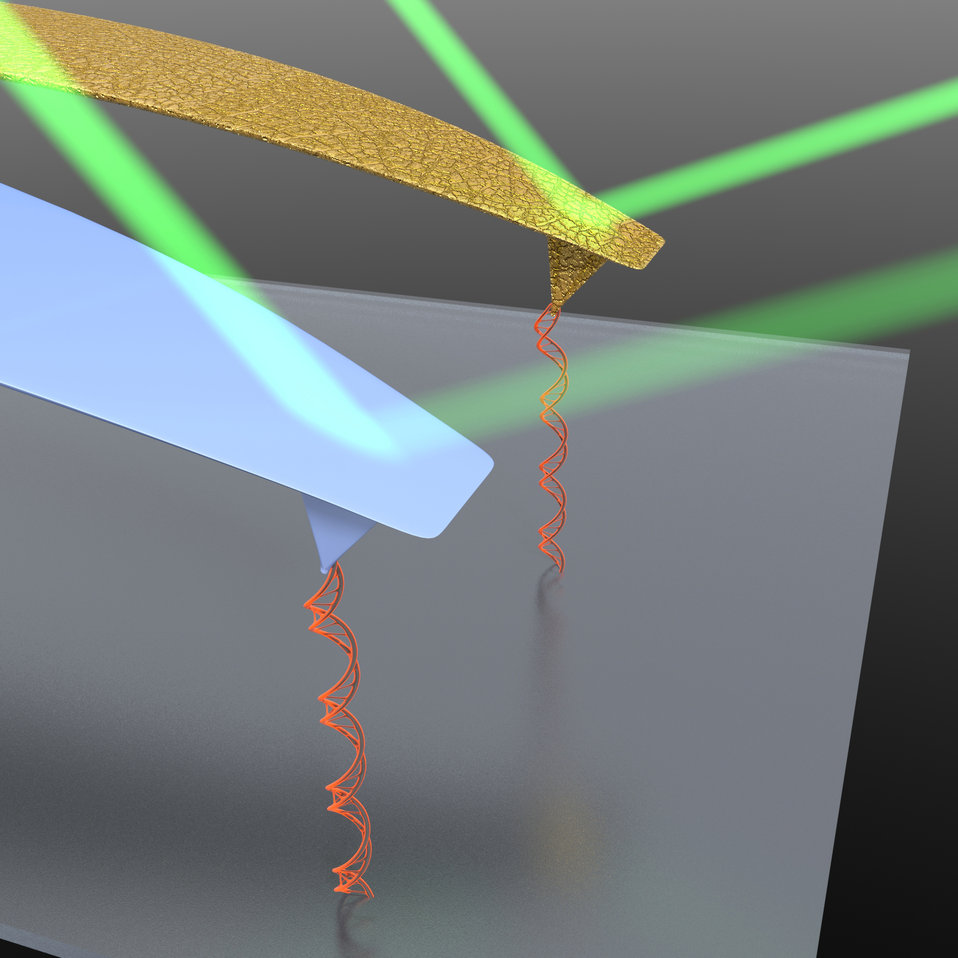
Atomic Force Microscope

Artist's conception of JILA's advance in atomic force microscope (AFM) design. To measure picoscale forces in liquid, a AFM probe attaches to a molecule such as DNA and pulls, and the deflection of the probe is measured. JILA researchers found that probes with the gold coating removed (purple in the illustration) make measurements that are 10 times more stable and precise than those made with conventional gold-coated probes. Gold helps reflect the laser light but it can also potentially crack, age, and creep, which degrades its mechanical properties and reduces measurement precision.